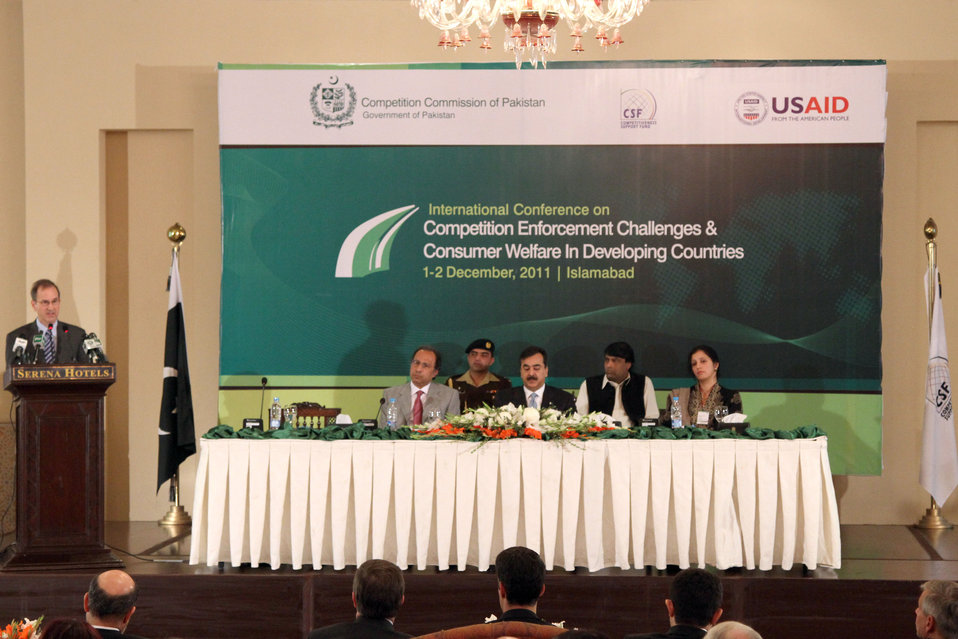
Richard Albright Gives Address at USAID-Sponsored International Conference on Competition

December 2011: At the USAID-funded international conference on Competition Enforcement Challenges & Consumer Welfare in Developing Countries, U.S. Coordinator for Economic & Development Assistance, Richard Albright speaks about the importance of fair and strong competition in business activities. Sponsored by USAID's Competitiveness Support Fund, the conference aimed to highlight international best practices in the field of competition.